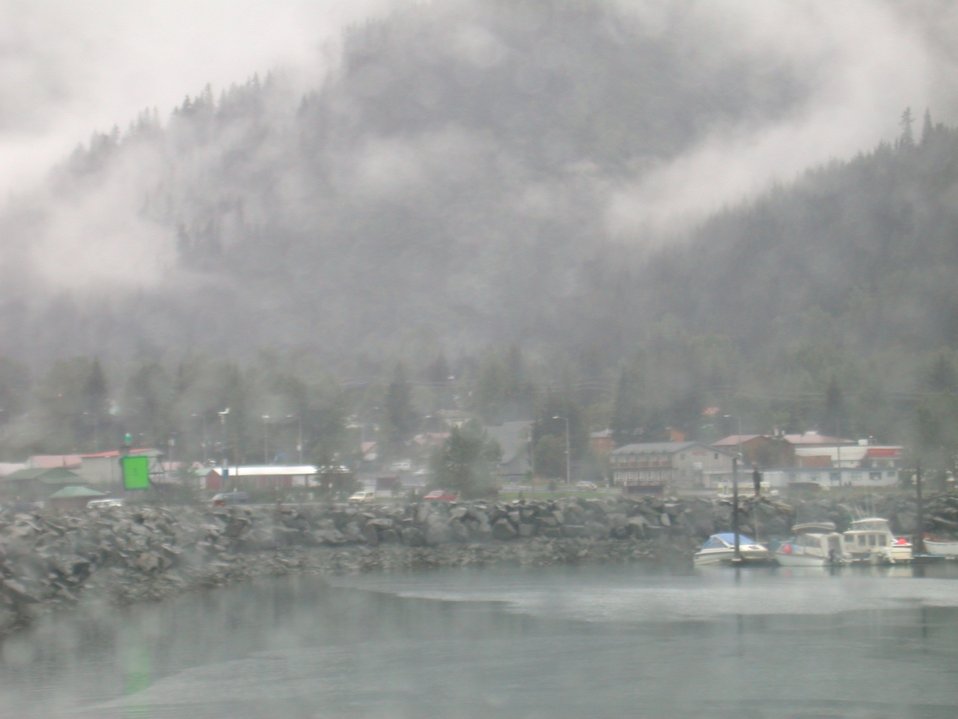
Seward on a foggy day.